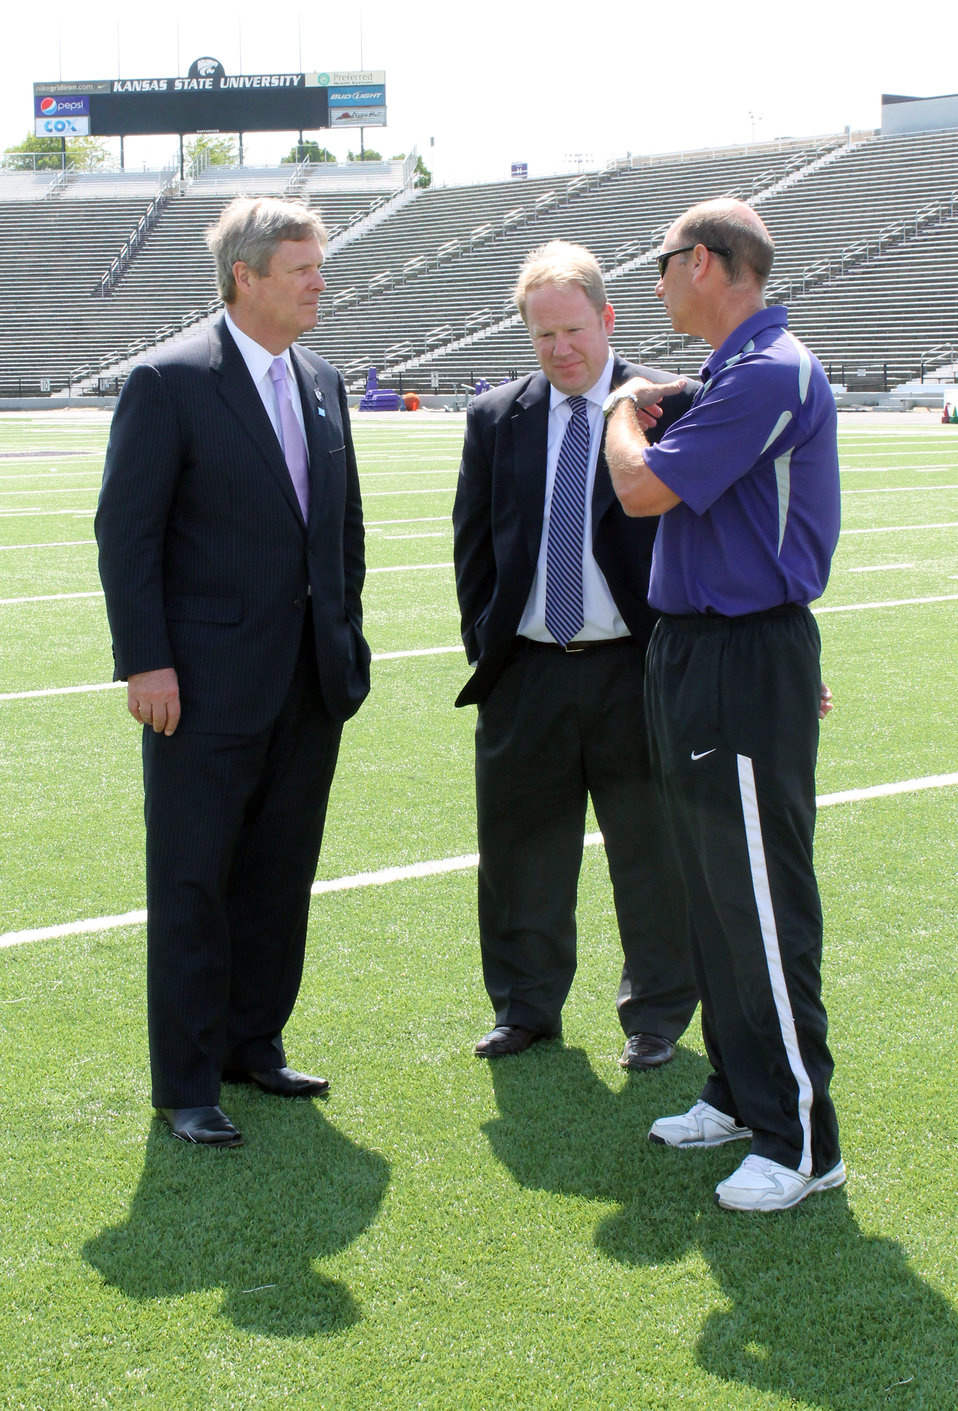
Agriculture Secretary Tom Vilsack (left), talks with Reid Sigmon, Sr., Associate AD/Chief Operating Officer and Sean Snyder, Associate Head Football Coach at the Bill Snyder Family Football Stadium at Kansas State University, in Manhattan, KS, on Tuesday, April 10, 2012.